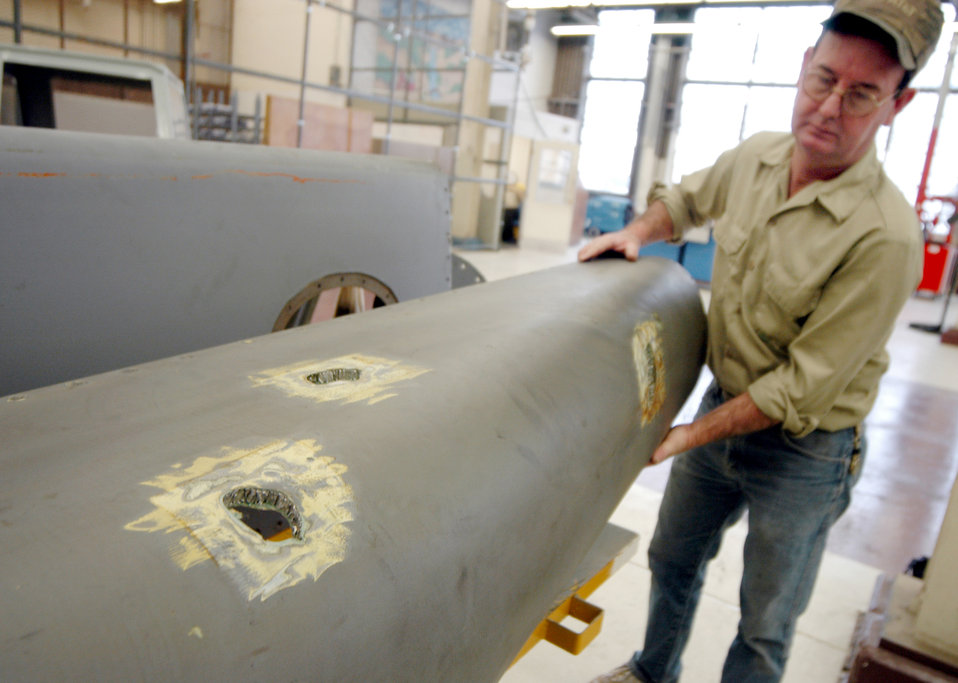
Back to duty

ROBINS AIR FORCE BASE, Ga. -- Wayne Selph shows the damage done to the torque box panel of the C-5 Galaxy that was hit by a missile shortly after takeoff in Iraq on Jan. 8. The C-5 production branch here made permanent repairs to return the aircraft to Air Mobility Command. Mr. Selph is a sheet metal mechanic.